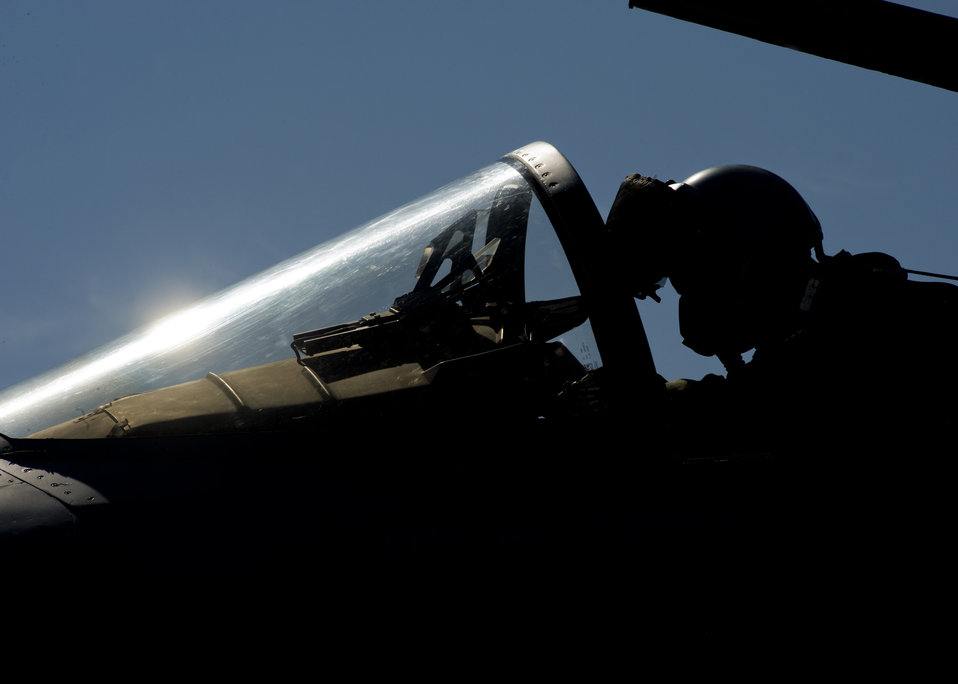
Polar Force readiness

Capt. Mike Knutt from the 19th Fighter Squadron prepares for take off May 19 during Polar Force at Elmendorf Air Force Base, Alaska.